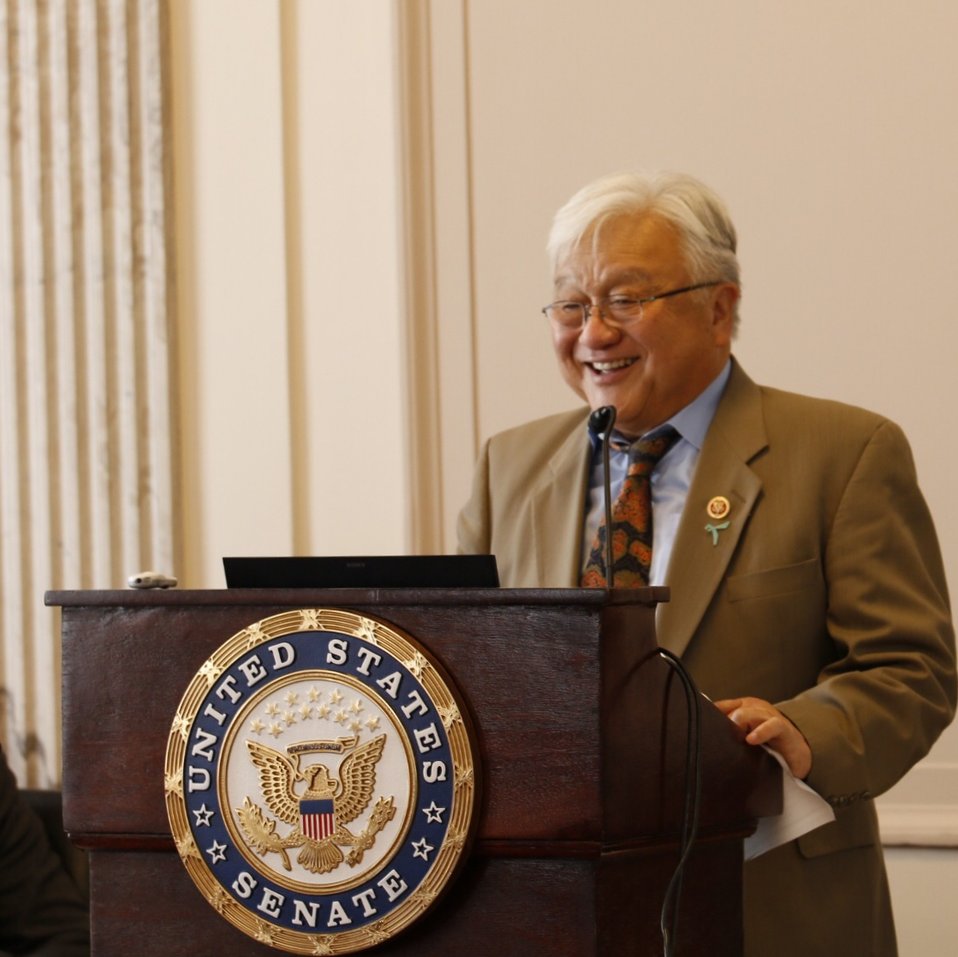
Rep.Honda

May 9, 2014 Congressional Hearing